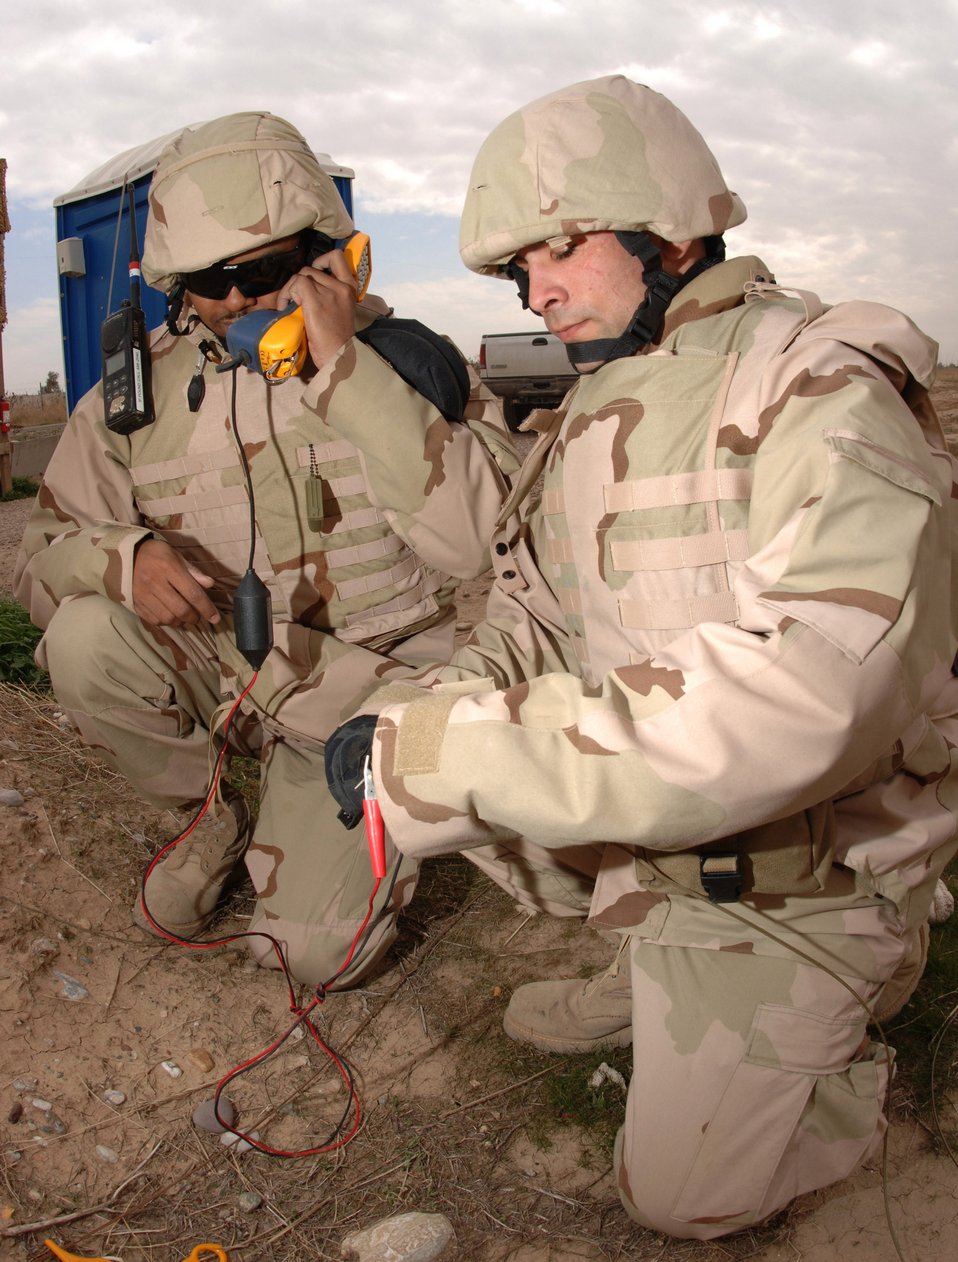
AF working to build cyber warrior career fields

Several existing career fields in the communications and electronic warfare areas, such as voice systems technicians pictured above, are being adapted to create new ones that will meet the warfighting needs of the cyberspace domain. Teams assigned to the Air Force Cyber Command are developing career fields for both enlisted and officer professionals. Pictured here are Senior Airman Kenneth Hawkins and Airman 1st Class Ryan Gall who are testing cutfield wires at Kirkuk Regional Air Base, Iraq.